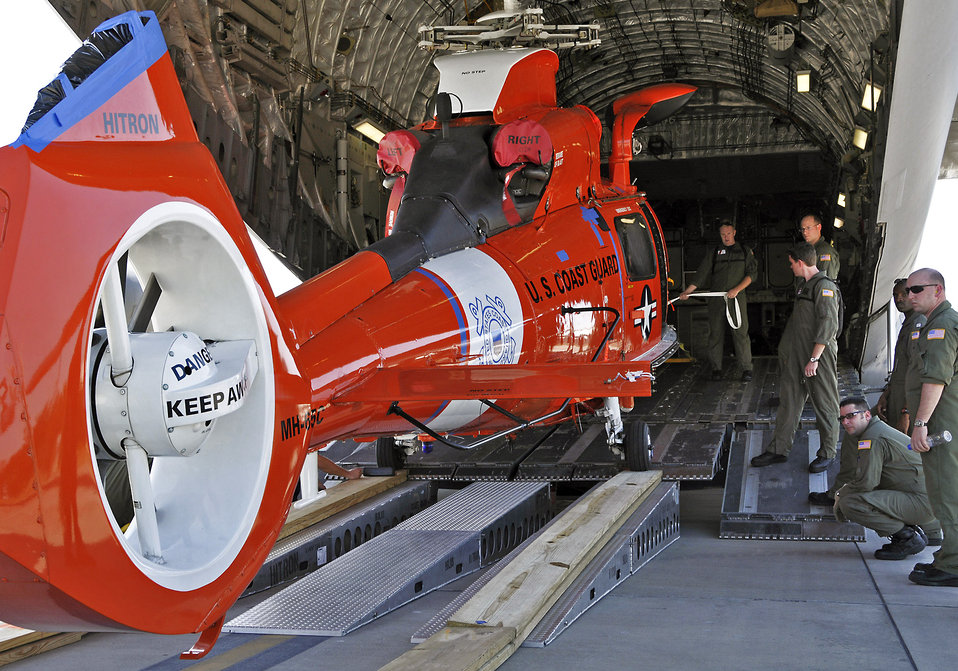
Moving the Coast Guard

Airmen load a Coast Guard helicopter onto a C-17 Globemaster III April 7 at Charleston Air Force Base, S.C. Two helicopters were delivered to Central America for missions there. The C-17 aircrew is from the Air Force Reserve's 315th Airlift Wing from Charleston AFB.